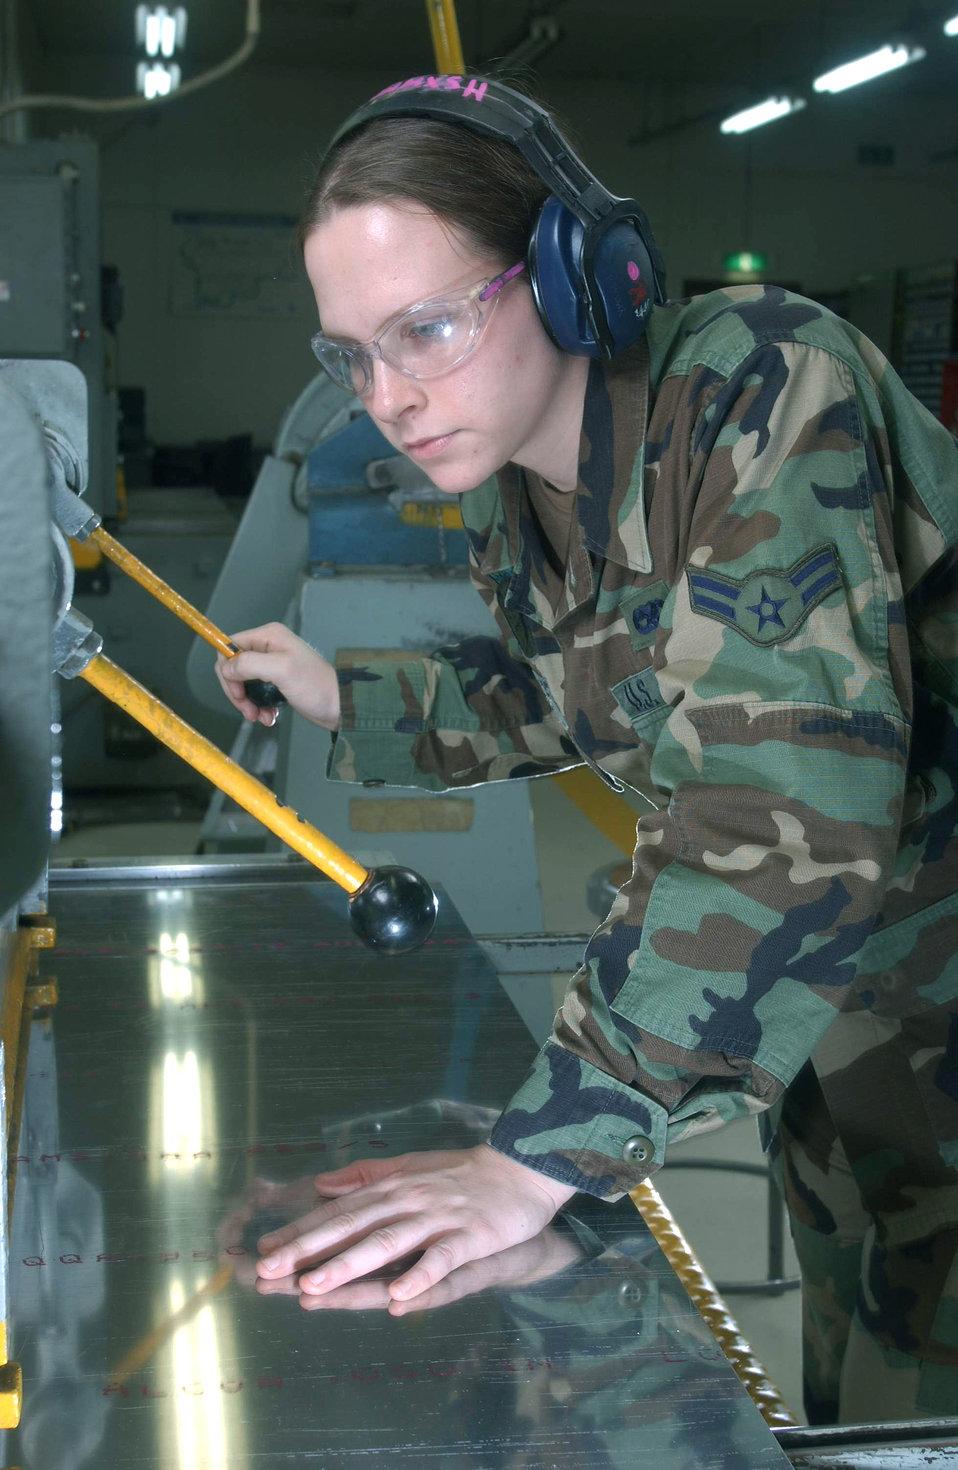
Routine maintenance

YOKOTA AIR BASE, Japan -- Airman 1st Class Misty Tate uses a foot shear to slice a metal sheet used to fabricate aircraft parts here. She is assigned to the 374th Maintenance Group's aircraft structural maintenance element. The element is responsible for structural repair and corrosion prevention of assigned C-130 Hercules aircraft here and more than 200 transit planes that stop over yearly.